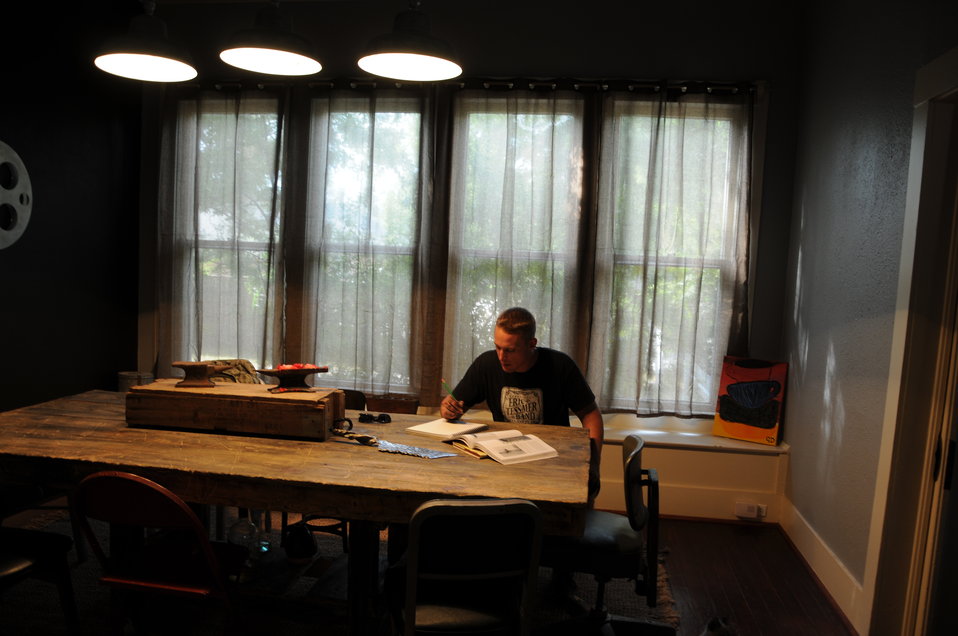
Forging lasting art

Staff Sgt. Grant Dupill, a medical technician in the 47th Medical Group, is designing his next project in his home. In this picture, he built the table, box on the table, light fixture and painting in the corner.